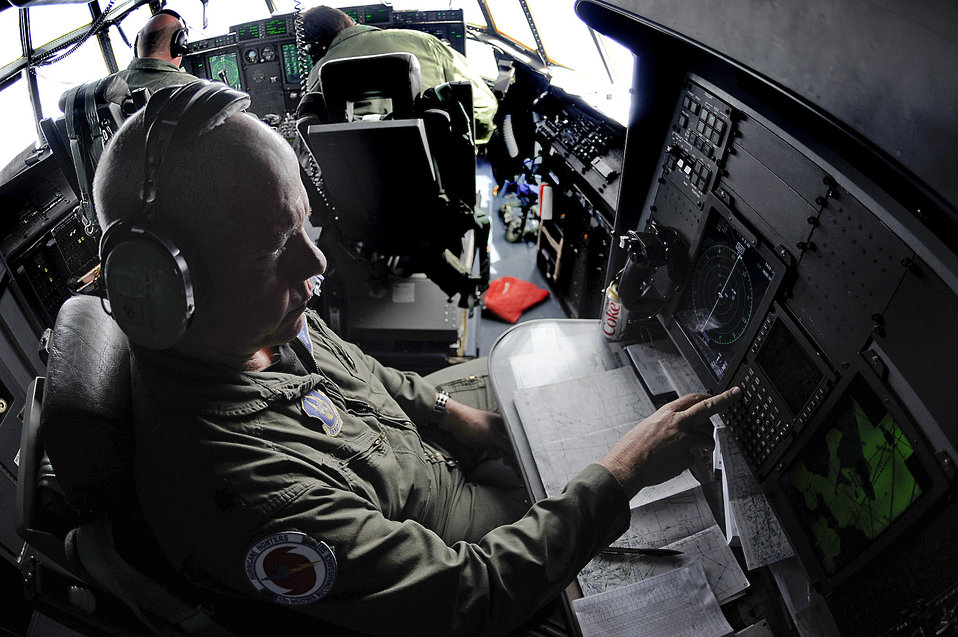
Training with the 'Hurricane Hunters'

Lt. Col. Cordell Gray checks the course during a training mission for the Hurricane Hunters of the 53rd Weather Reconnaissance Squadron to St. Croix, V.I. Colonel Gray is the navigator for the flight.